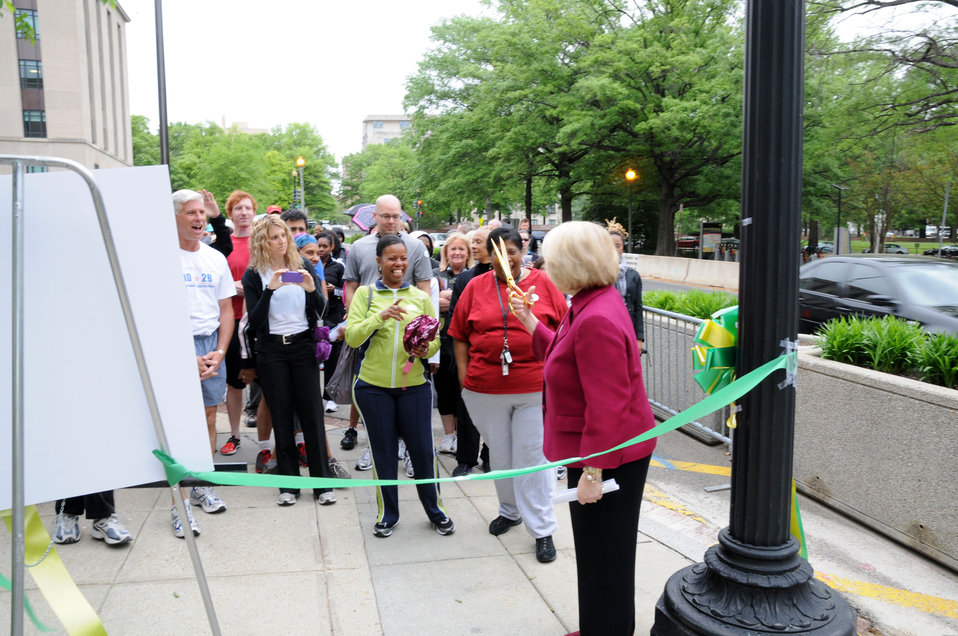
Ambassador Verveer Cuts the Ribbon for the 6k Walk for Water

Ambassador-at-Large for Global Women's Issues Melanne Verveer cuts the ribbon at the second Annual 6k Walk for Water outside of the U.S. Department of State in Washington, D.C., on April 18, 2012. The Annual 6k Walk for Water, part of the Department’s Earth Day celebrations, is organized to acknowledge the millions of people in the developing world, most often women and girls, who walk an average of six kilometers to collect water for their families.